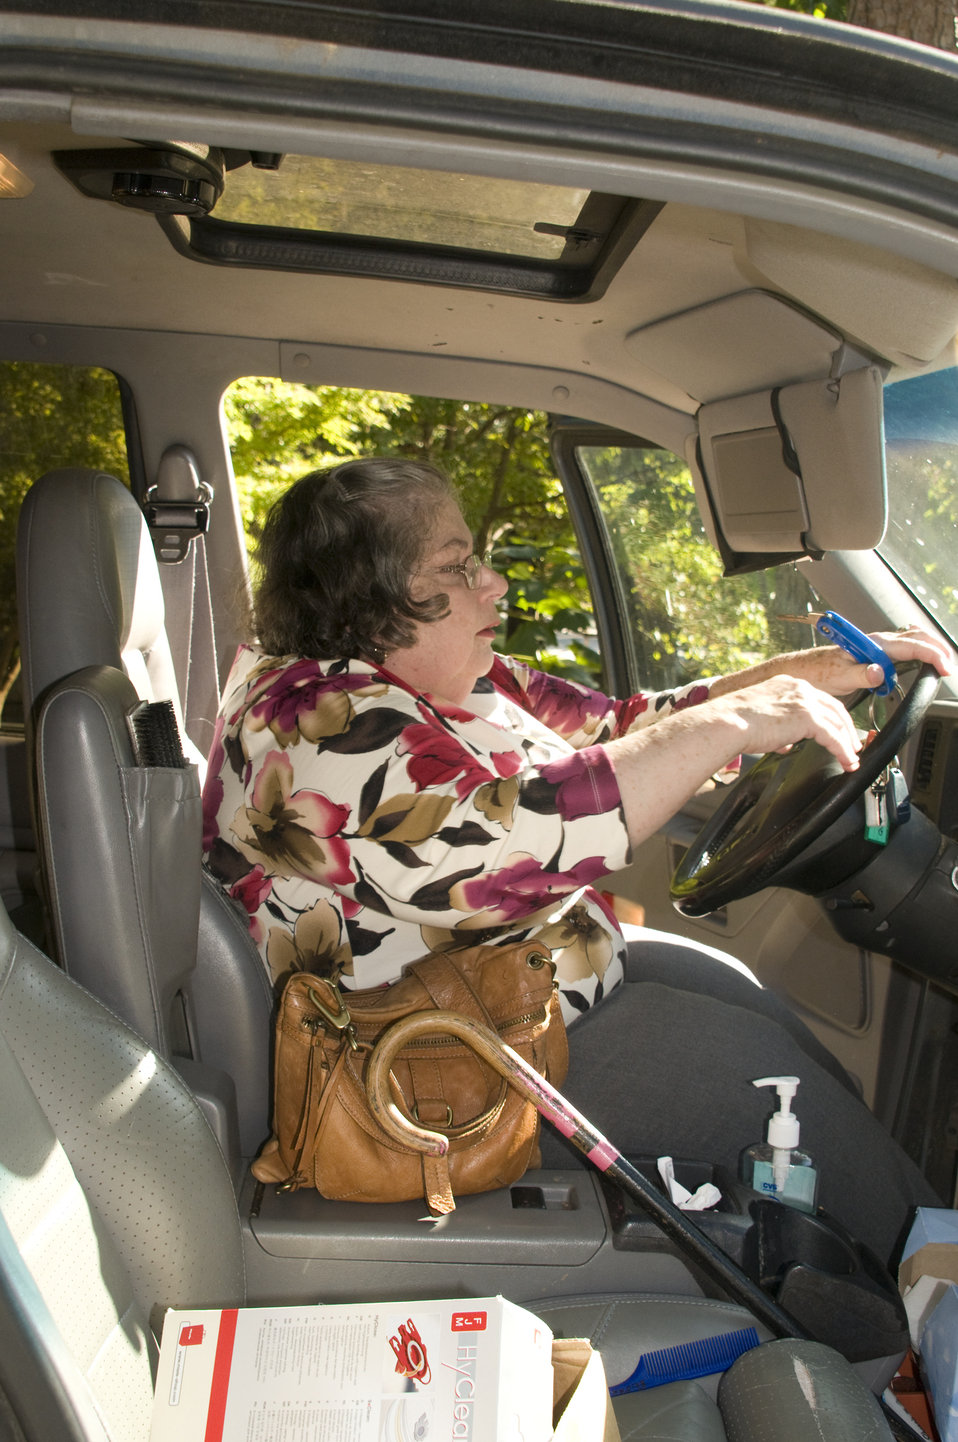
Finally, after having loaded her luggage into her vehicle's back seat area, this woman, who is a rheumatoid arthritis patient, had entered the automobile, and had settled herself in the driver's seat. She'd placed her walking cane and handbag on the console, which also contained a pump bottle of hand sanitizer.